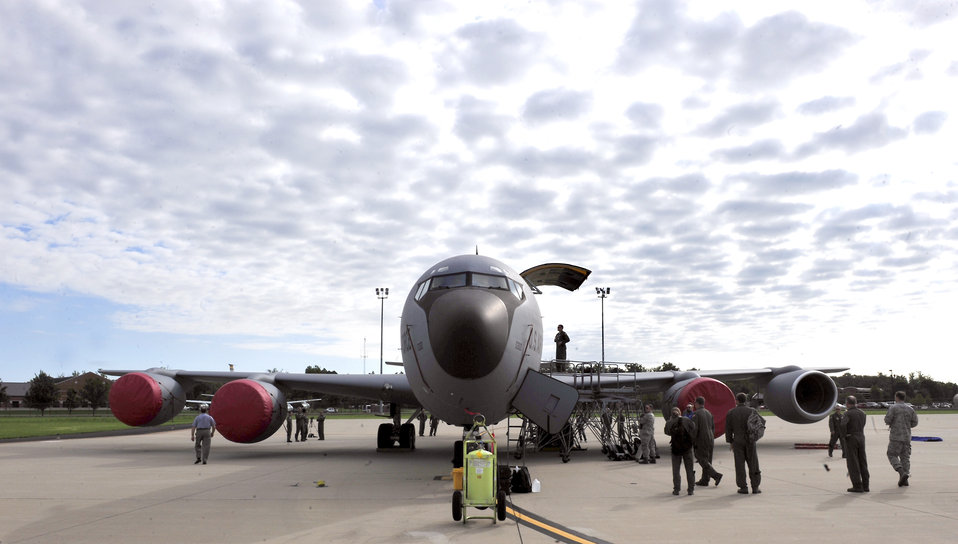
Finding the easy way out

Flight crew members and test evaluators prepare a KC-135 Stratotanker for a ground egress scenario June 28, 2011, at Scott Air Force Base, Ill. The Air Mobility Command-directed test was used to determine the number of passengers one passenger monitor can safely egress, or evacuate, from an aircraft in 90 seconds.